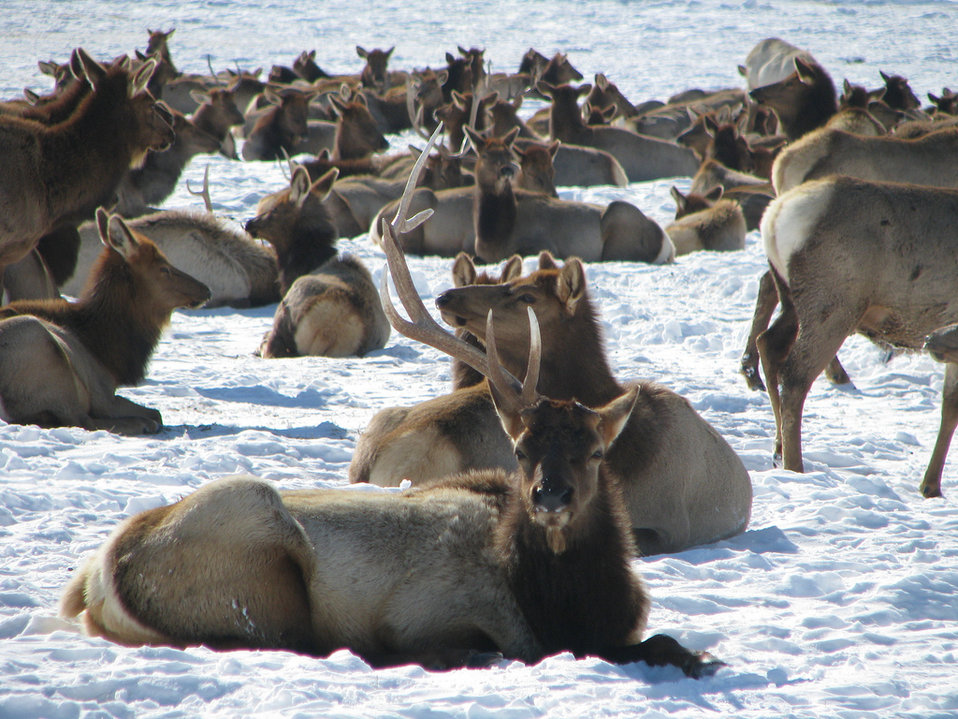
bull elk shedding an antler

National Elk Refuge, MT
March 2011
Photo: Lori Iverson, USFWS
The National Elk Refuge was created by Congress in 1912, and was the first site in the nation's growing network of conservation lands to be named a refuge.